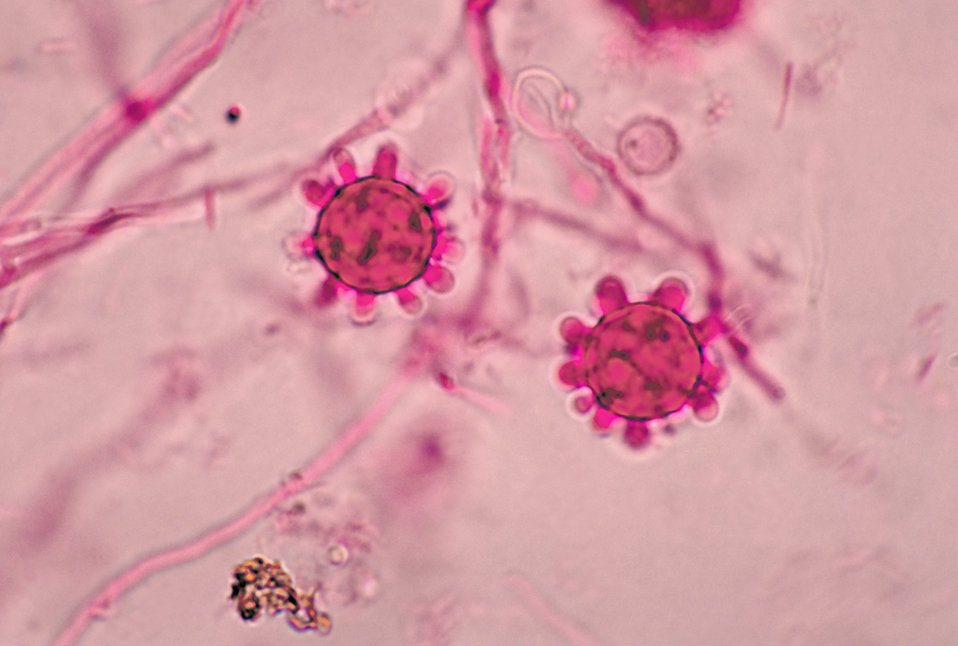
This photomicrograph shows two tuberculate macroconida of the Jamaican isolate of Histoplasma capsulatum.